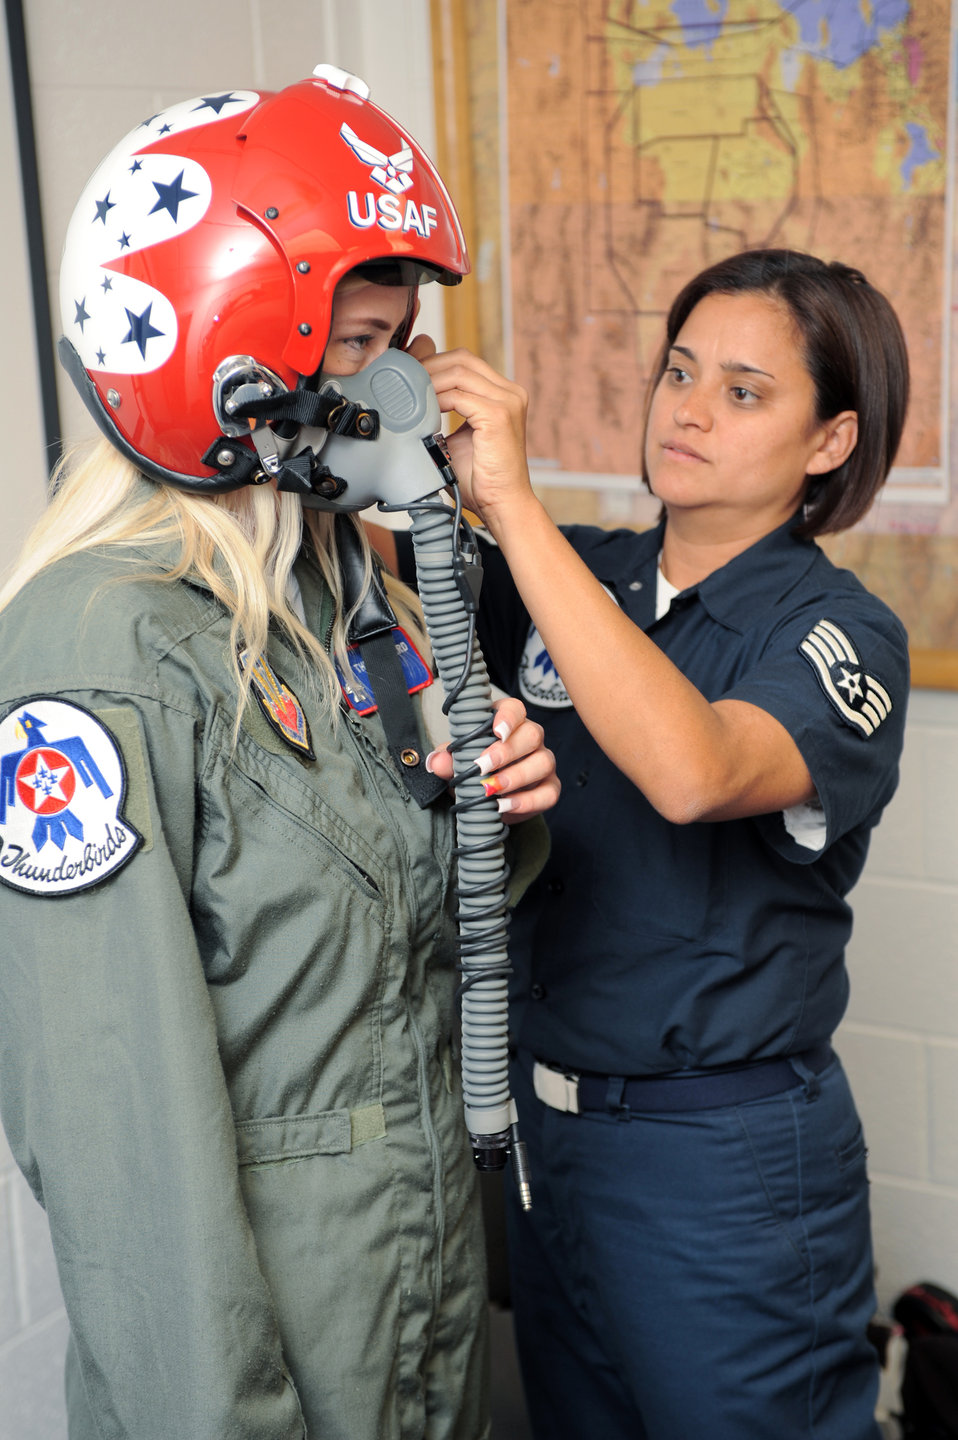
Hometown Hero

Staff Sgt. Robbin Bailon, an Air Force Thunderbirds flight equipment technician, adjusts the helmet and face mask on Megan Funk during her flight suit fitting June 4 at Hill Air Force Base, Utah. Mrs. Funk, a second grade teacher at Majestic Elementary School in Ogden, Utah, was selected as a Hometown Hero for her volunteer service to the community for which she received a flight in a Thunderbird F-16 Fighting Falcon.